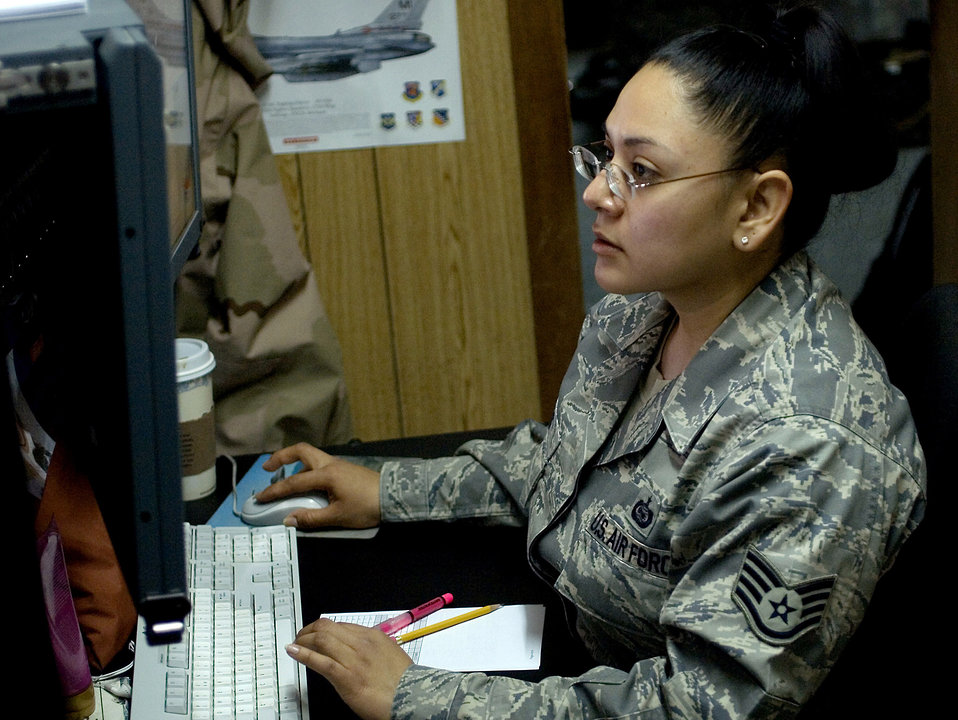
TARS pod brings picture into focus

Staff Sgt. Alma Torres, an imagery analyst with the 332nd Expeditionary Operations Support Squadron at Joint Base Balad, Iraq, supplies decision makers with imagery intelligence. Theater Airborne Reconnaissance System imagery helps ground commanders achieve tactical objectives. Sergeant Torres, deployed from the 24th Intelligence Squadron at Ramstein Air Base, Germany, is a native of Miles, Texas.